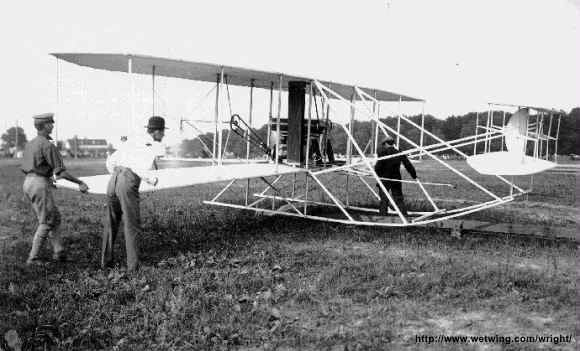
Wright 1909 Military Flyer

Upon being purchased by the Signal Corps for $30,000 on August 2, 1909, the original airplane was redesignated Signal Corps Airplane No. 1, the world's first military heavier-than-air flying machine. It was used in October 1909 for giving flight instructions to Lts. Frank P. Lahm and Frederic E. Humphreys, and in 1910 it was used by Lt. Benjamin D. Foulois to teach himself how to fly. By March 1911, the airplane was no longer fit for use and was retired. It is now on exhibit at the Smithsonian Institution, Washington D.C.